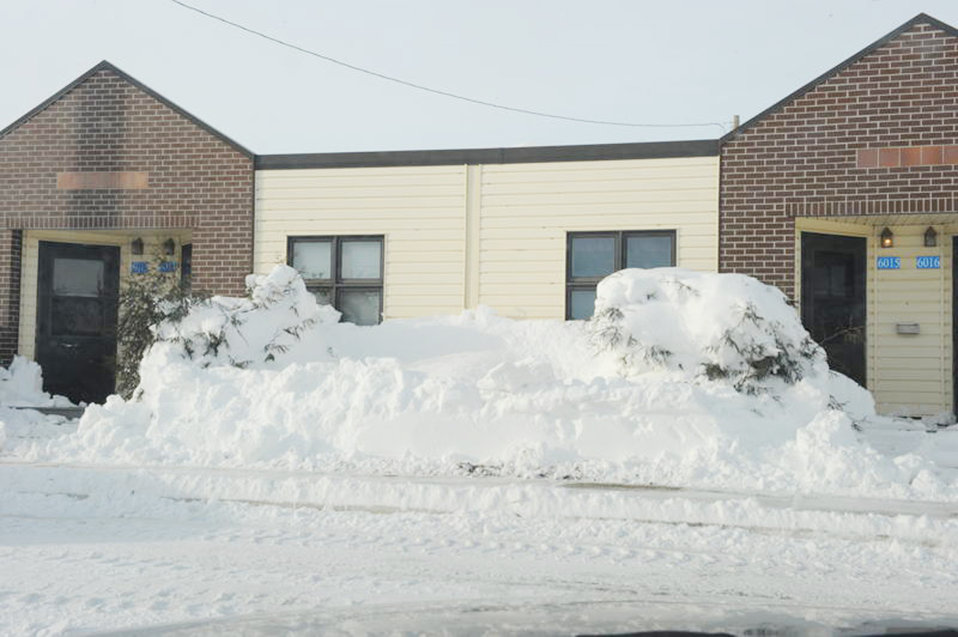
Minot residents weather blizzard, continue mission

Snow piled up in front of the temporary lodging facility Dec. 29, 2009 at Minot Air Force Base, N.D. A Christmas weekend blizzard resulted in 25.7 inches of snow.